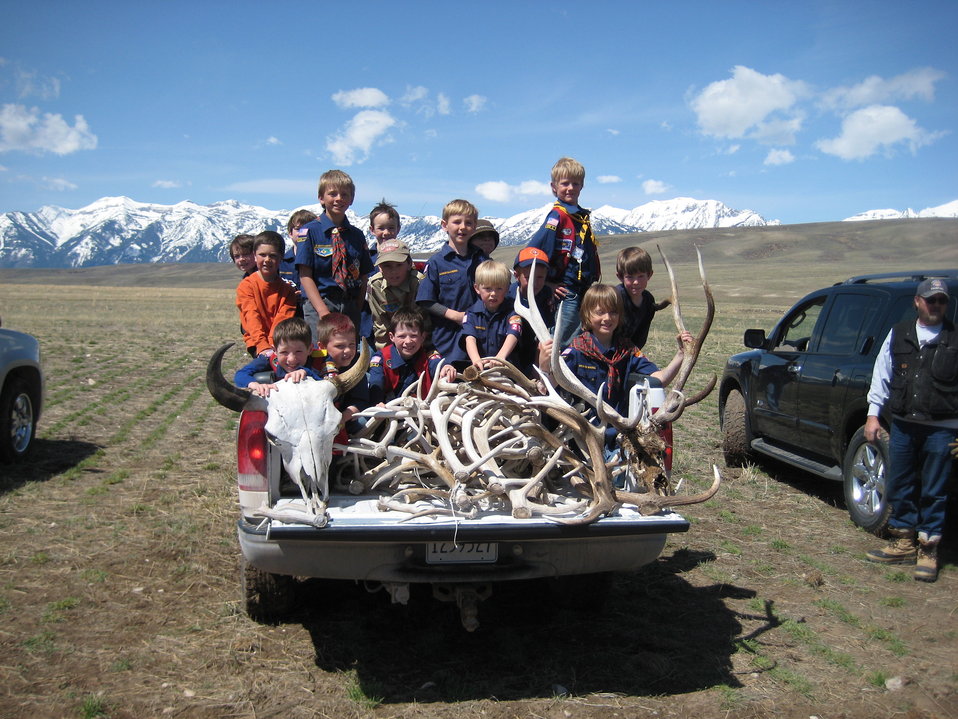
Proud Scouts Pose With Their Find

A group of Boy Scouts pile in the back of a truck to pose with the antlers they collected out in the field.